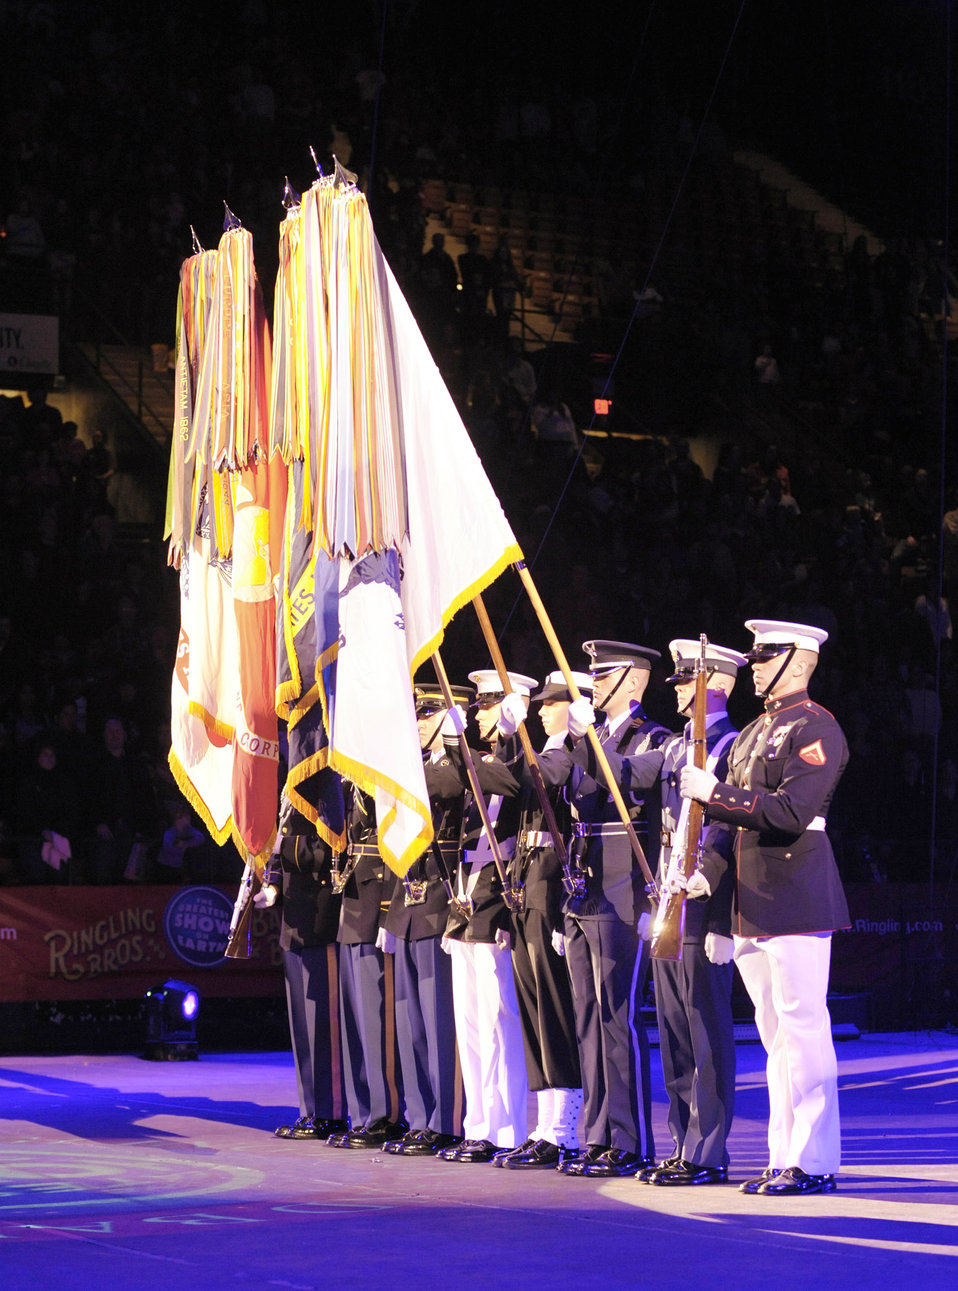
YOAFF & Circus

The Military District of Washington's Joint Color Guard present the flags at the beginning of the Ringling Bros. and Barnum & Bailey